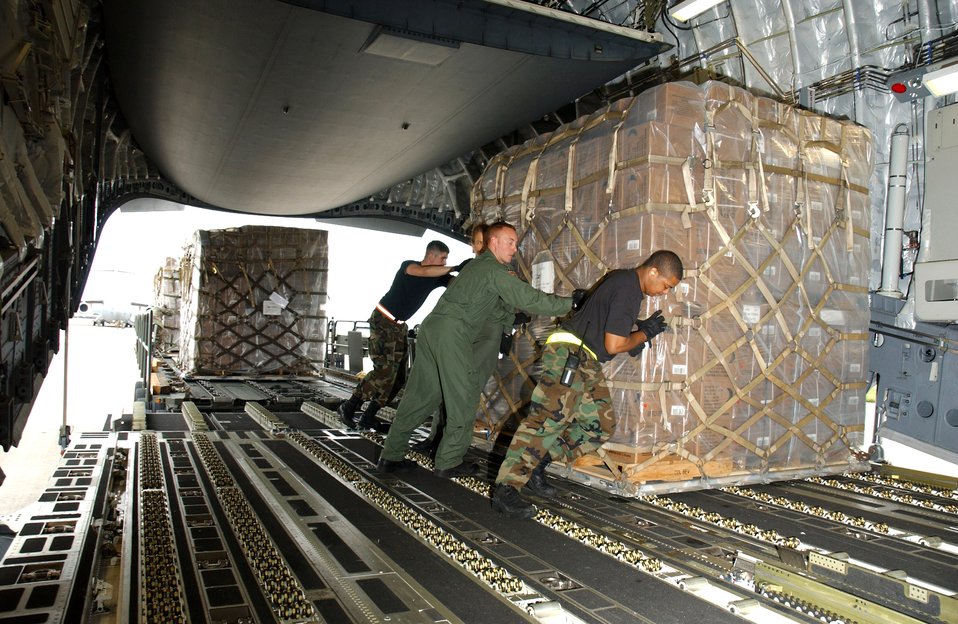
Airmen provide relief to China

Airmen from the 733rd Air Mobility Squadron at Kadena Air Base, Japan, and 15th Airlift Wing at Hickam Air Force Base, Hawaii, load food, cold weather gear and medical supplies onto a C-17 Globemaster III bound for China Feb. 8 at Kadena AB. Recently, 19 Chinese provinces experienced the most severe winter storms in 50 years, imposing severe hardships on millions of Chinese citizens. U.S. Pacific Command coordinated the delivery of the humanitarian supplies to People's Liberation Army at Shanghai International Airport, China.